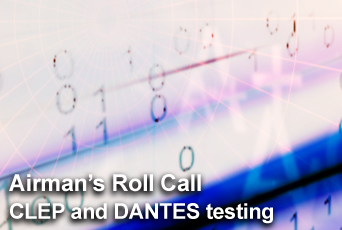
Airman's Roll Call: Earning college credit

The Defense Activity for Non-Traditional Education Support program is here to help Airmen be better prepared for Air Force leadership positions or, should an Airman choose to leave military service, civilian career opportunities. This week's Airman's Roll Call explains ways Airmen can continue their education during times of high operations tempo.